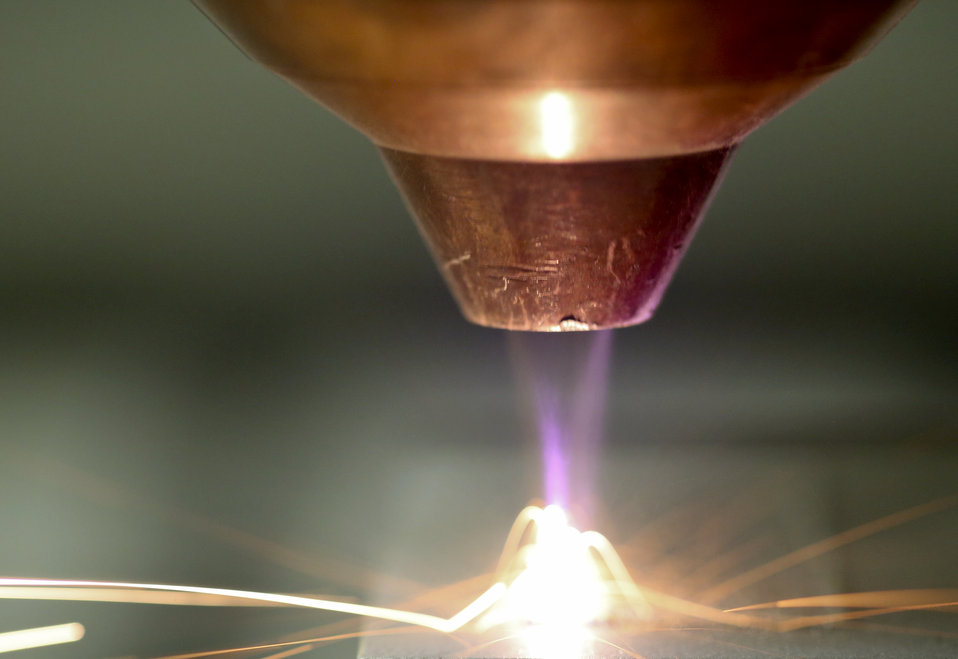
Polymer additive manufacturing lab at the Manufacturing Demonstration Facility at Oak Ridge National Laboratory.